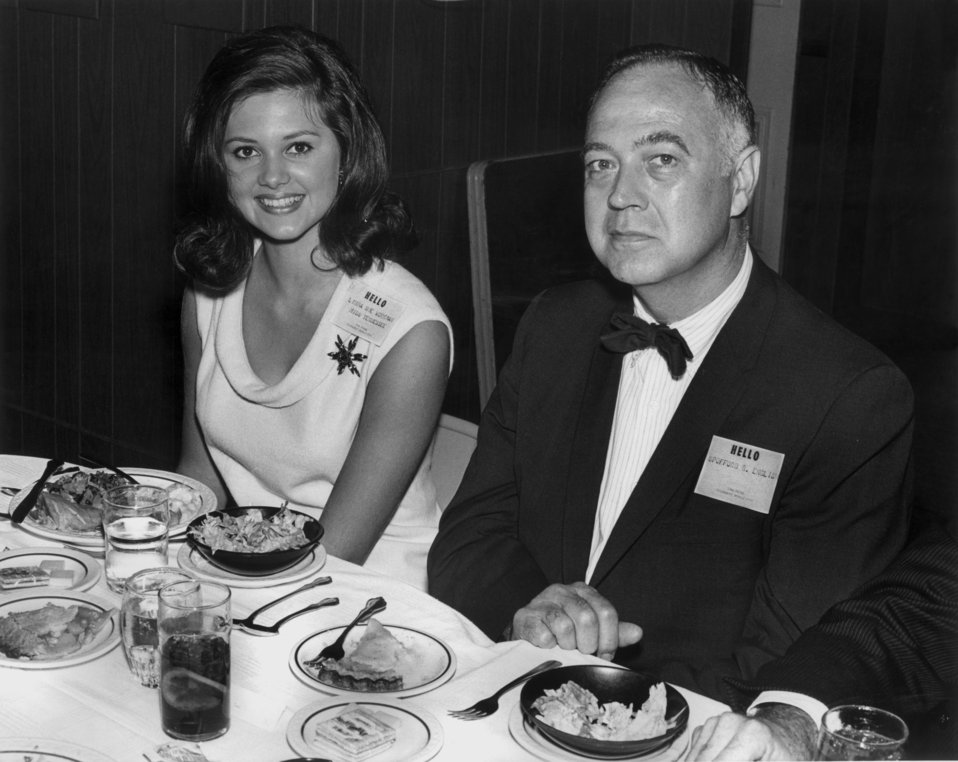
State of Tennessee - Atomic Energy Commission Oak Ridge 25 Miss Tennessee Alexander Inn Oak Ridge

67-0209-11 DOE photo by Frank Hoffman
State of Tennessee - Atomic Energy Commission Oak Ridge 25 Miss Tennessee Alexander Inn Oak Ridge Tennessee 8-29-1967